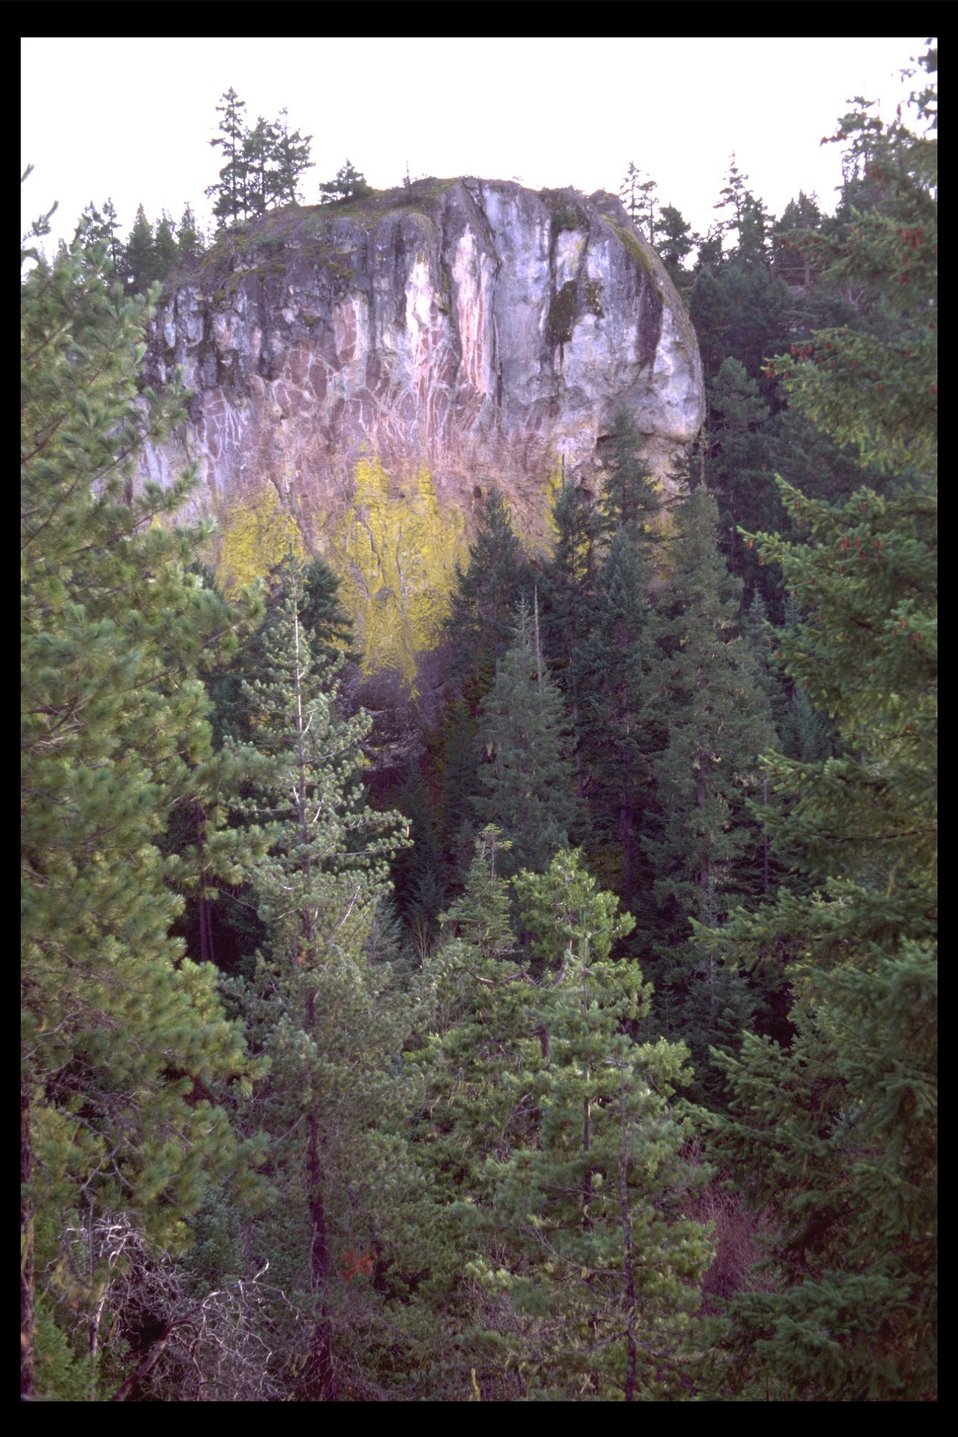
Rock Formation along the North Umpqua River.